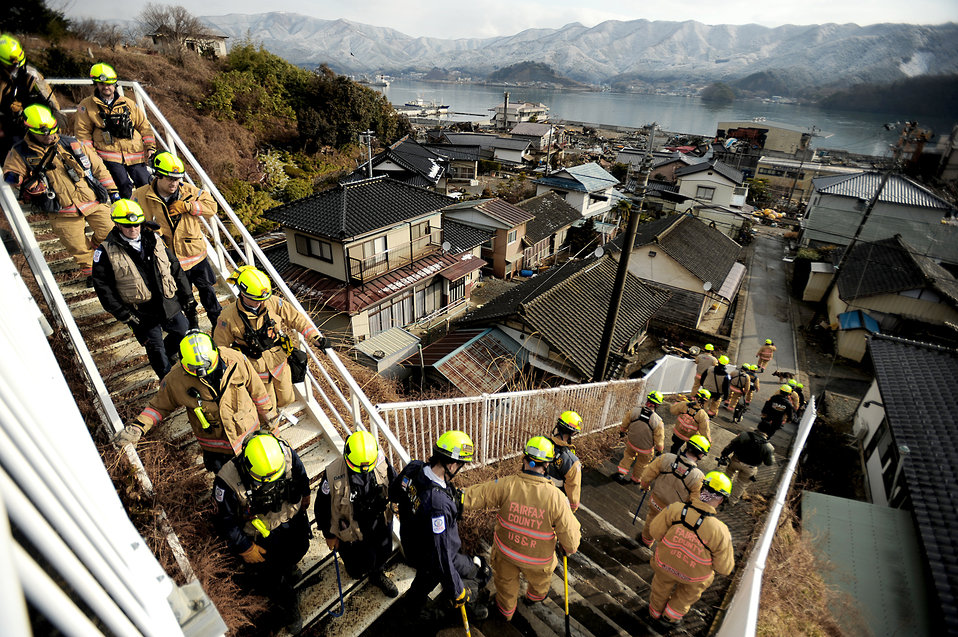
OPERATION TOMODACHI

Members of the Fairfax County, Va. Task Force 1 Urban Search and Rescue head down a flight of stairs to start their operations, searching structures and debris on March 16, 2011 in Ofunato, Japan. A 9.0 Earthquake hit Japan on March 11, 2010 that caused a Tsunami that destroyed anything in its path.